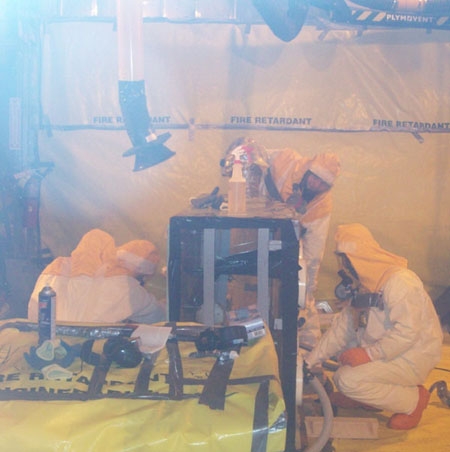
Workers Complete Three of Four Recovery Act Projects at the West Valley Demonstration Project

Workers at the West Valley Demonstration Project (WVDP) process a section of a glove box designated as waste for shipment to a permanent disposal facility. Contact-handled waste processing is one of the Recovery Act projects completed at the WVDP.